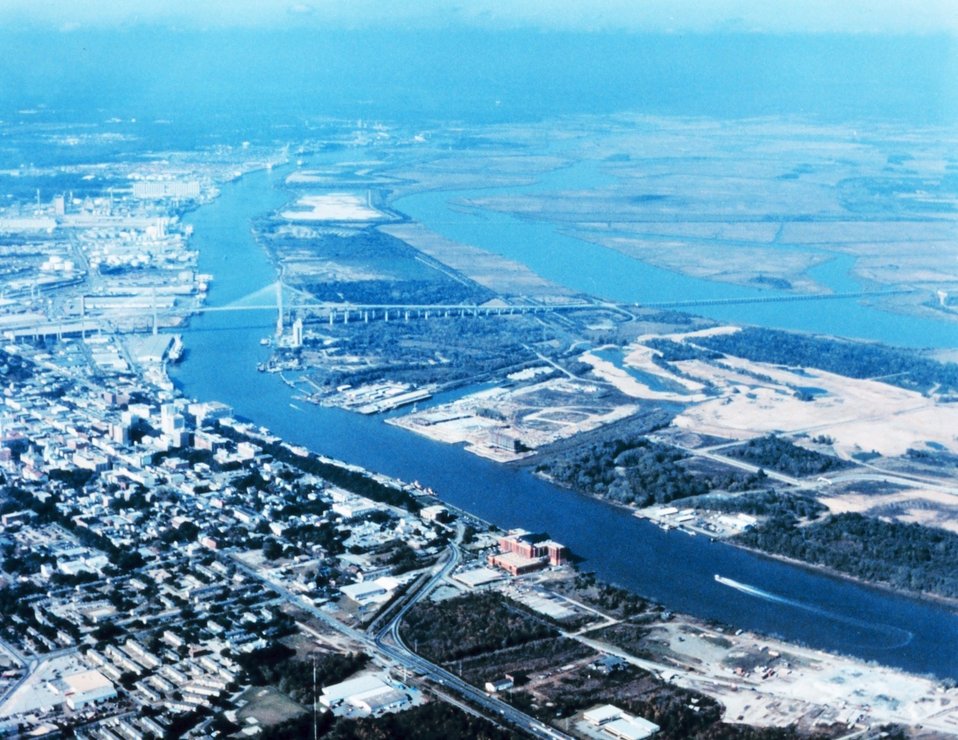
3205 North Latitude 8106 West Longitude.